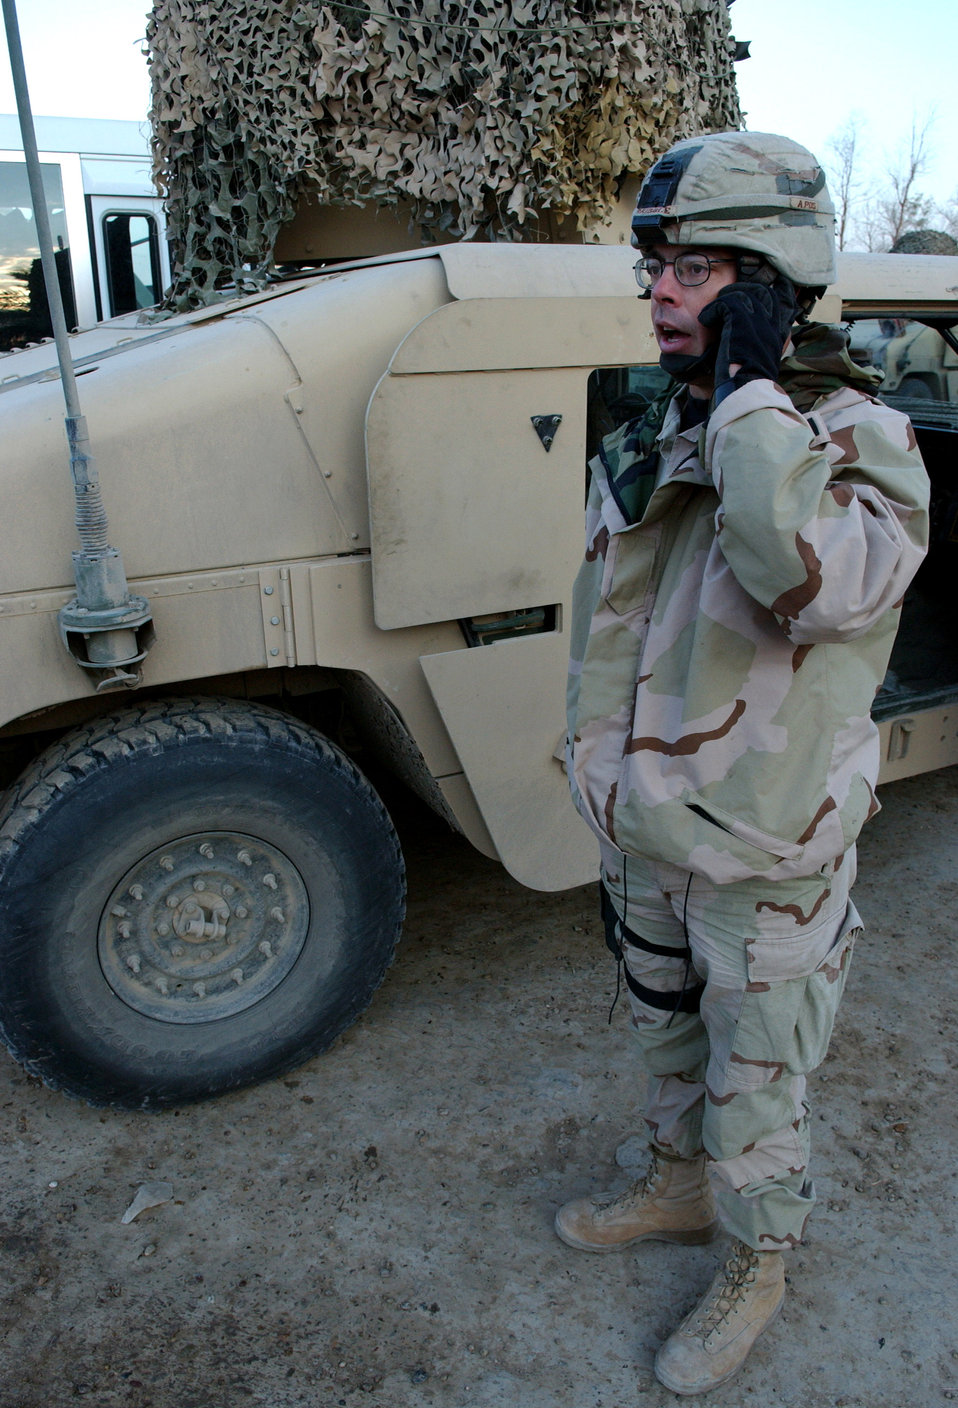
Street patrol

Tech. Sgt. Gene Gribble speaks to his squadron headquarters prior to a patrol Nov. 23 in Baghdad, Iraq. Sergeant Gribble is a squad leader with Detachment 7, 732nd Expeditionary Security Forces Squadron, and its mission is to deploy into the city streets of Baghdad assisting Iraqi police in achieving self-sufficiency.